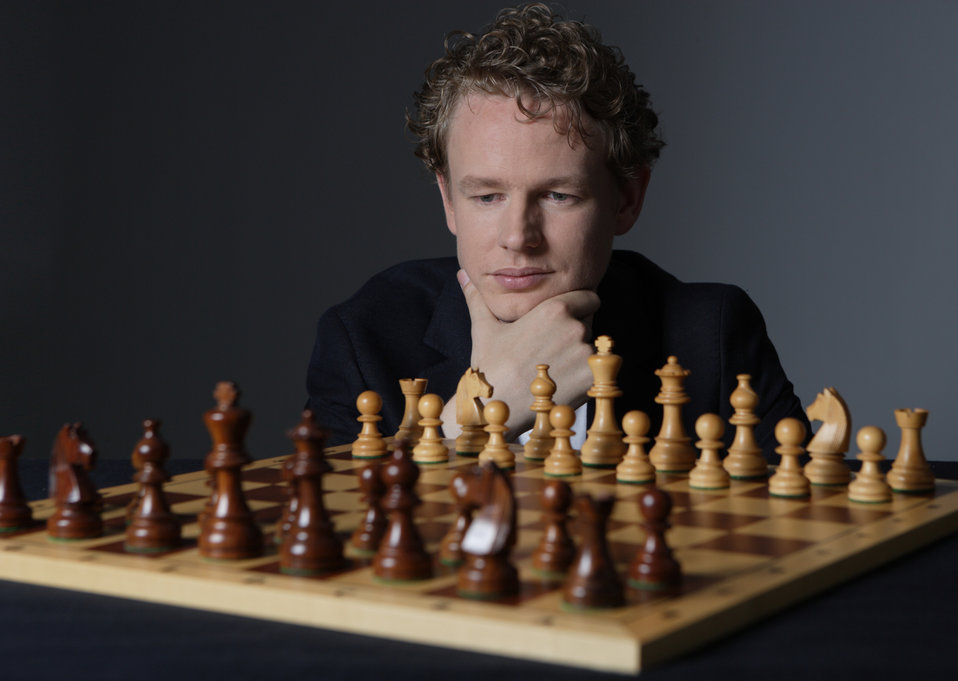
Deutsch: de:Jan Gustafsson 2010